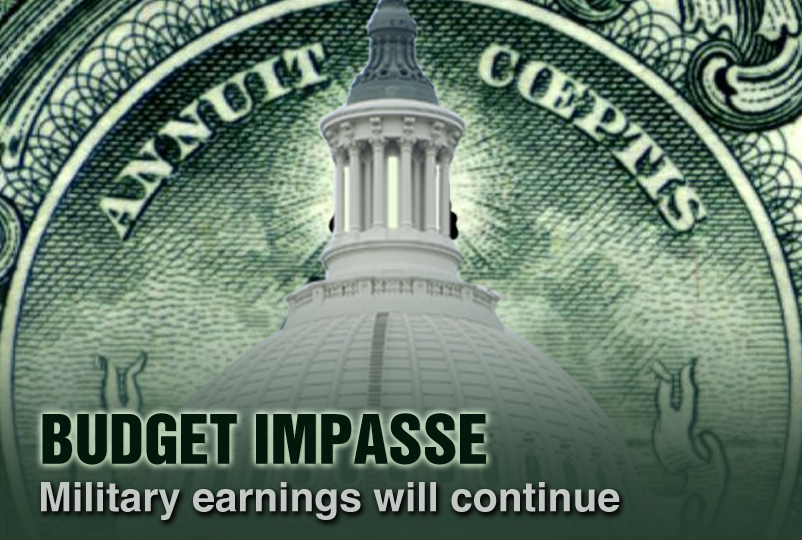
2011 Budget Impasse